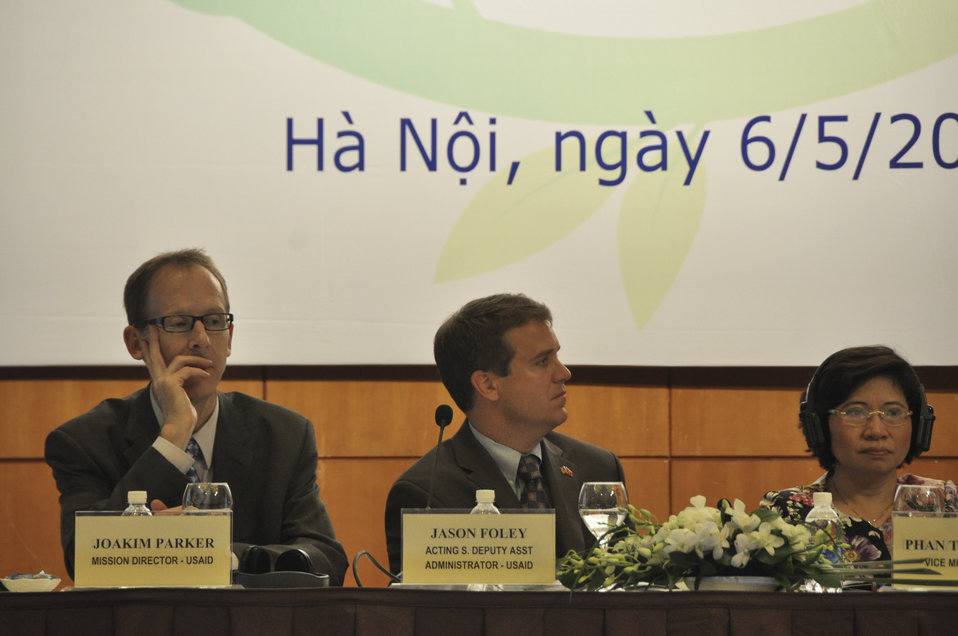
USAID Vietnam Mission Director Joakim Parker (left), Acting Senior Deputy Assistant Administrator Jason Foley of USAID (center) and Ms. Phan Thi My Linh, Vice Minister of Vietnam’s Ministry of Construction (right)

Hanoi, May 6, 2014.